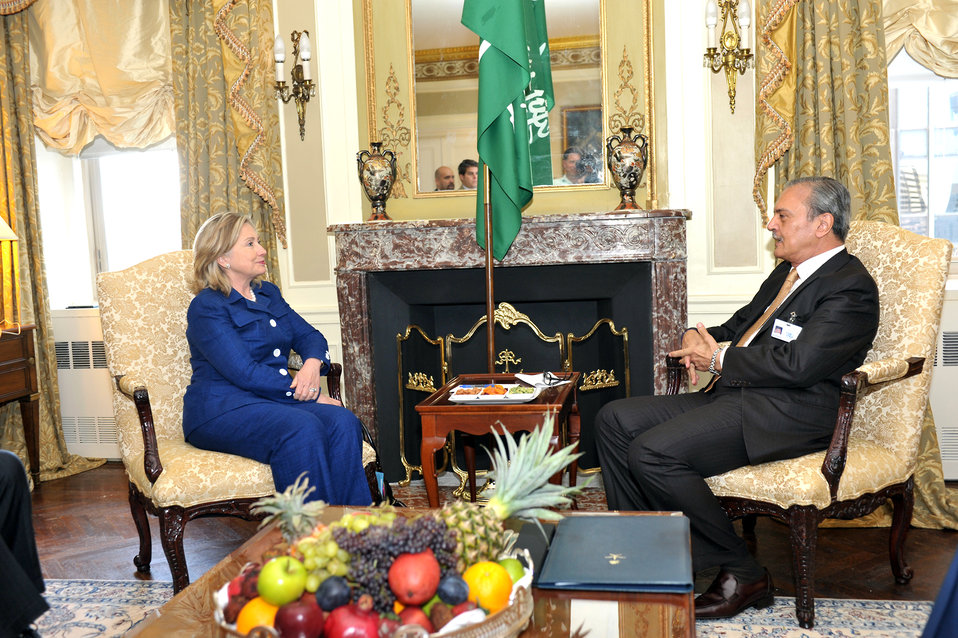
Secretary Clinton Holds a Bilateral With Saudi Foreign Minister al Faisal

U.S. Secretary of State Hillary Rodham Clinton holds a bilateral meeting with Saudi Foreign Minister Saud al Faisal at the Waldorf-Astoria in New York, New York, on September 21, 2010.